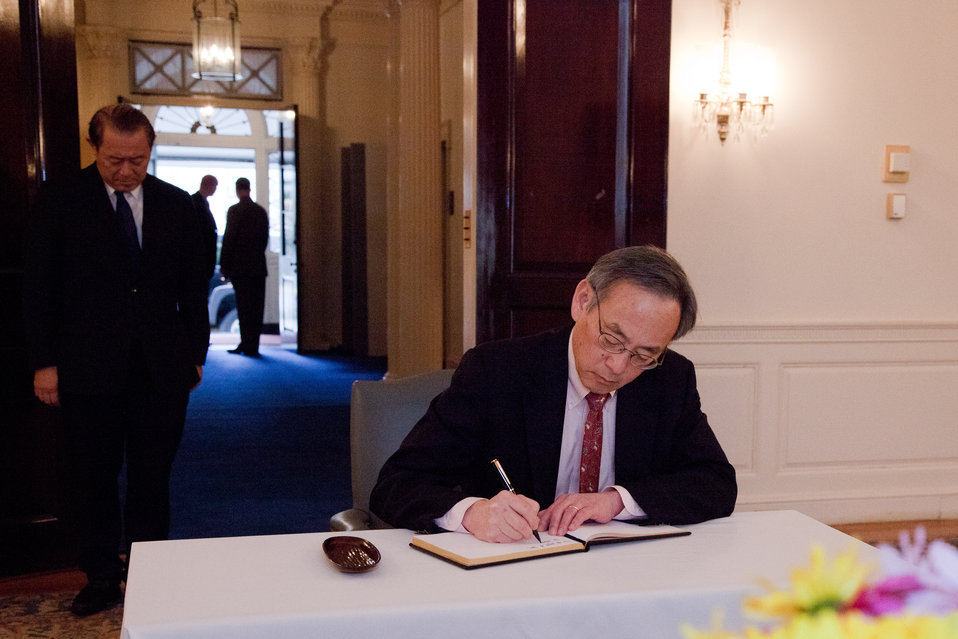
Sec. Chu visits Japanese Embassy 6 of 8

Sec. Steven Chu signs a book of condolences for the tragedy in Japan.